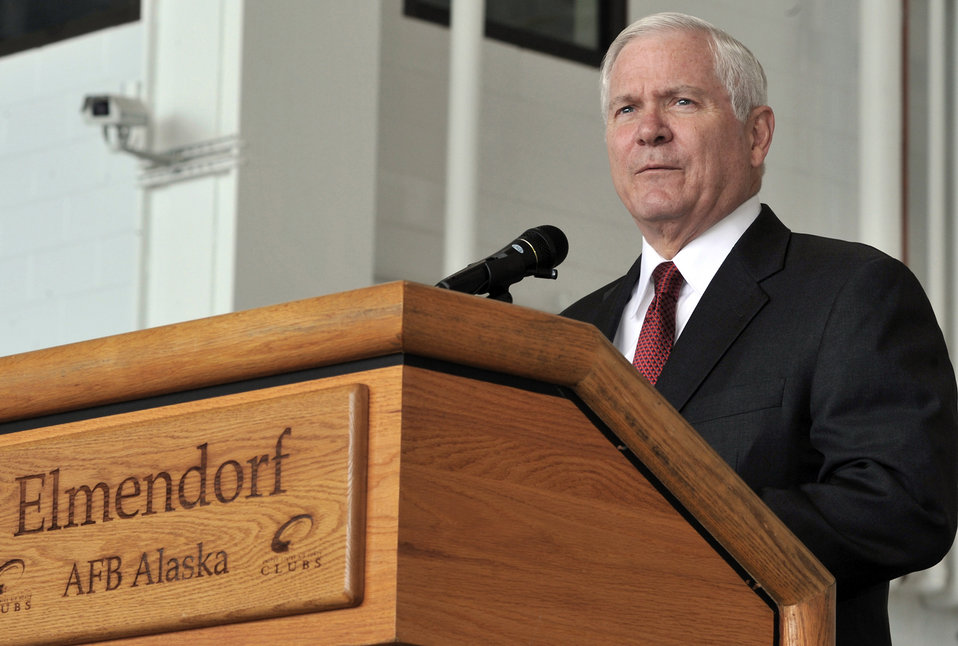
Gates visits Elmendorf, addresses servicemembers

Secretary of Defense Robert M. Gates speaks to Soldiers, Airmen and Marines during a June 1 town hall meeting at Elmendorf Air Force Base, Alaska. Secretary Gates came to Elmendorf AFB to discuss with military members how the war is affecting this base and their everyday lives.